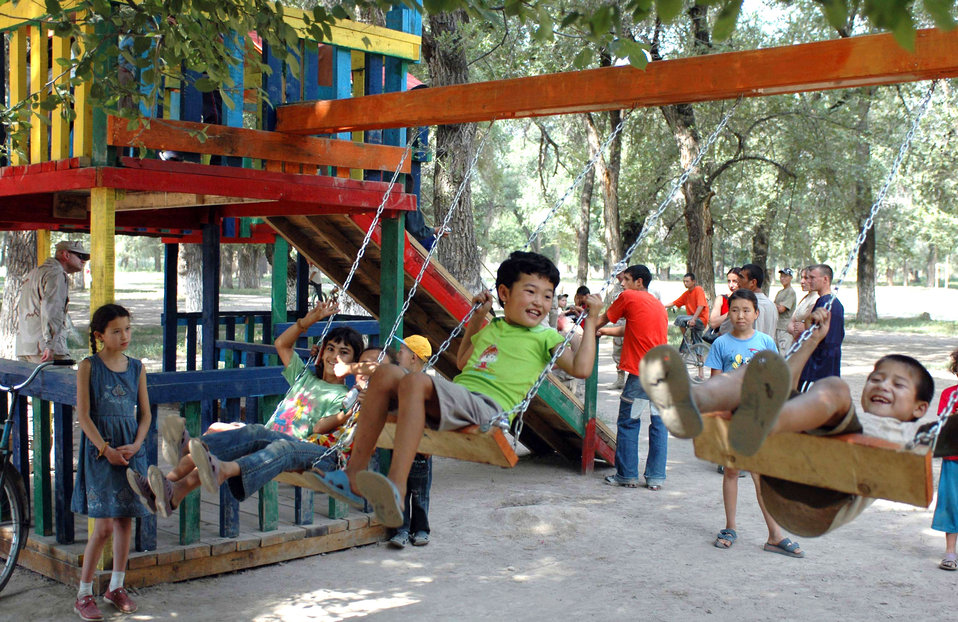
376th ESFS dedicates new children's playground

Oktobersky Village, Kyrgyzstan children enjoy swinging on their new playground's swing set. Members from the 376th Air Expeditionary Wing at Manas Air Base, Kyrgyzstan, were on hand to dedicate the new playground, built by members of the 376th Expeditionary Security Forces and Civil Engineer squadrons.